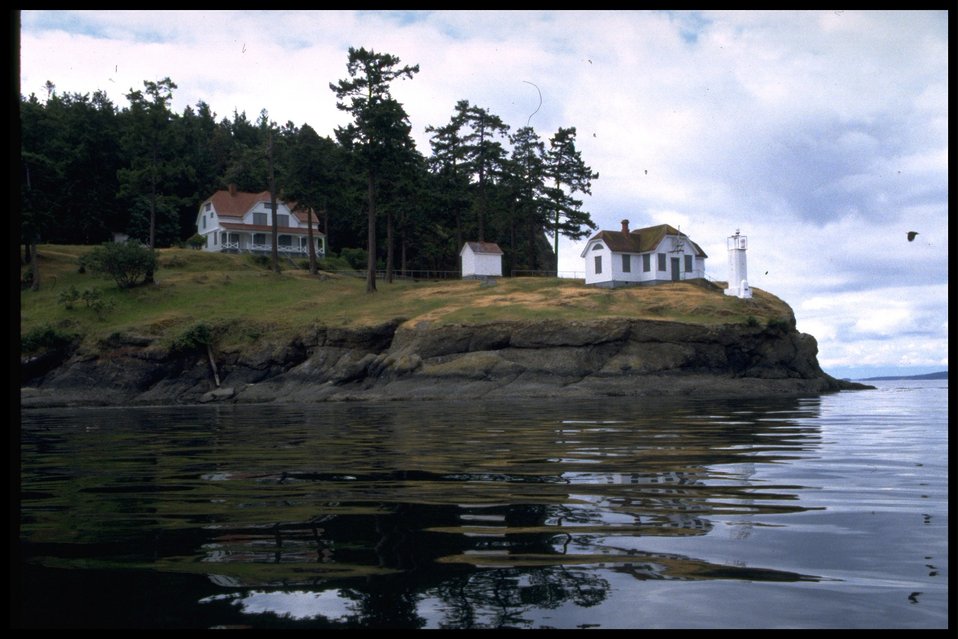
Turn Point from water with light station and buildings. Series of 17 photos.